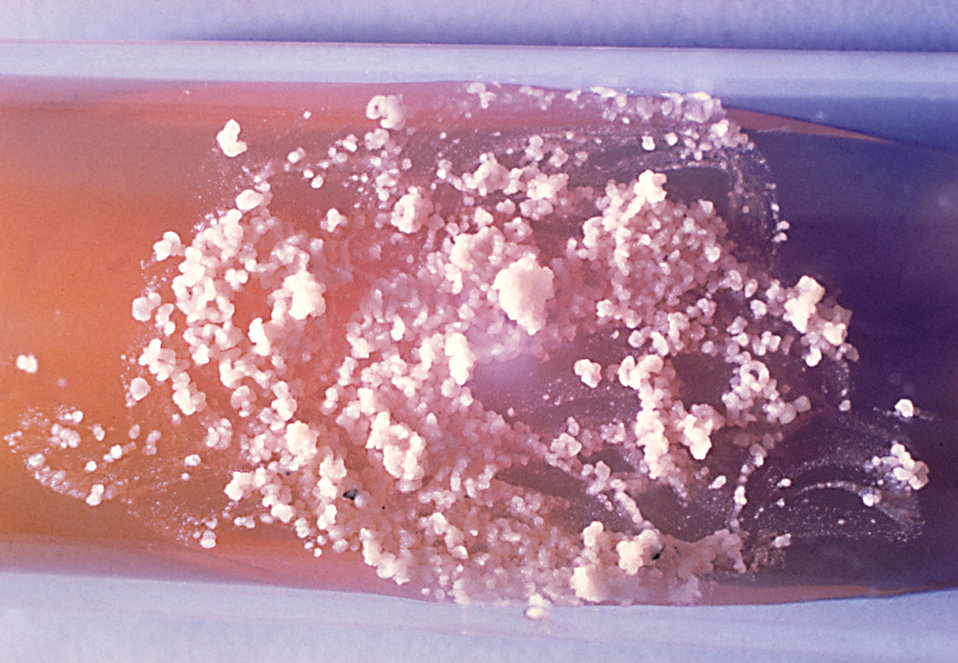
This is a slant culture growing the fungus Paracoccidioides brasiliensis during its yeast phase.